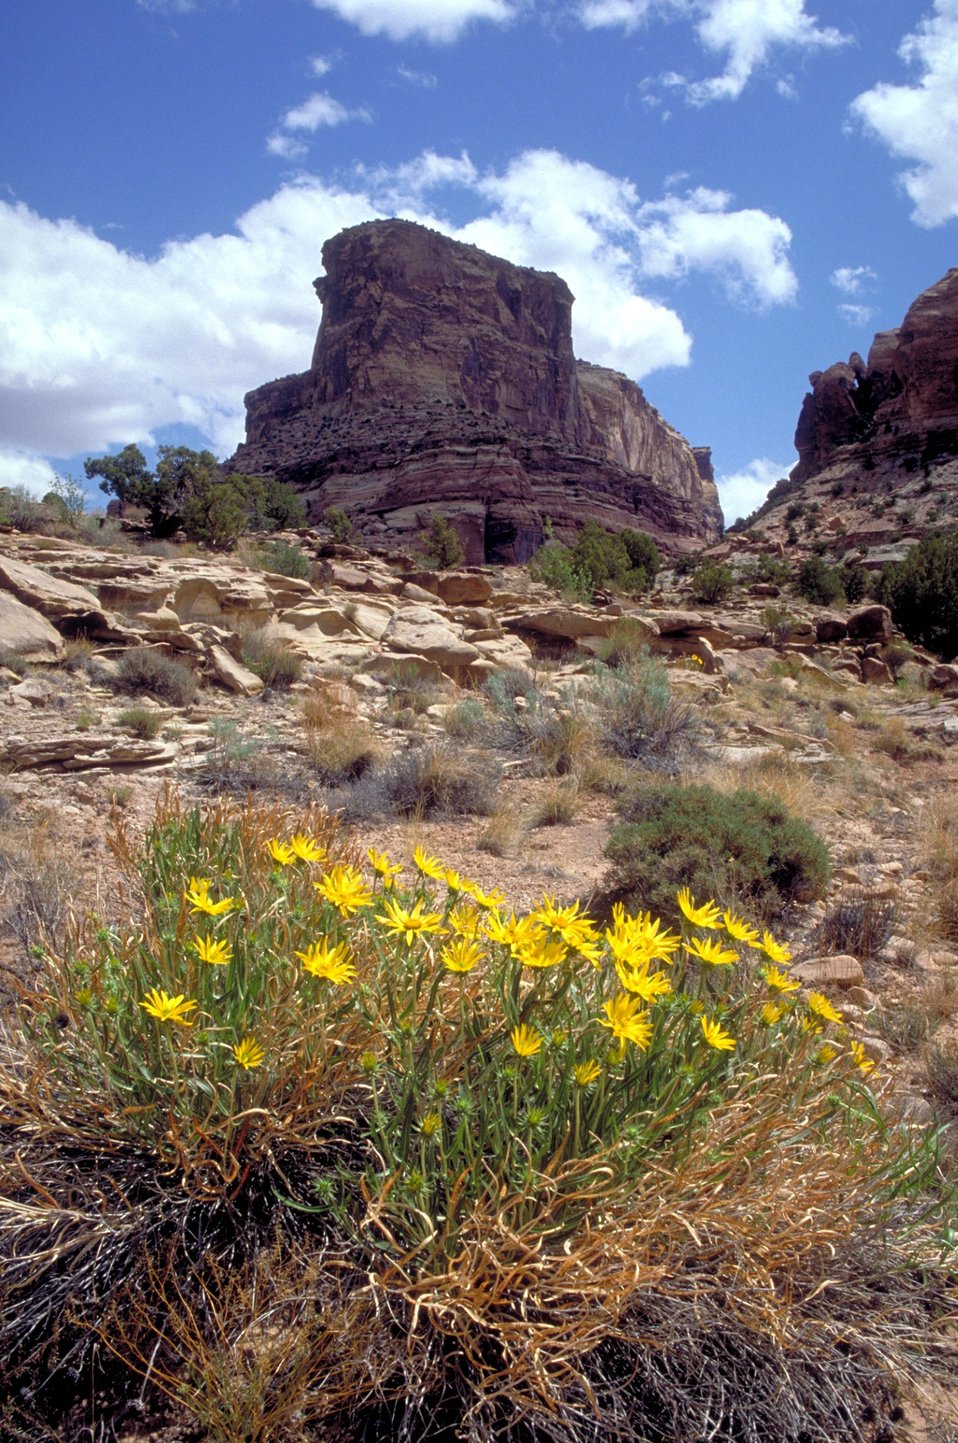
Butte near Buckhorn Draw, San Rafael Swell.